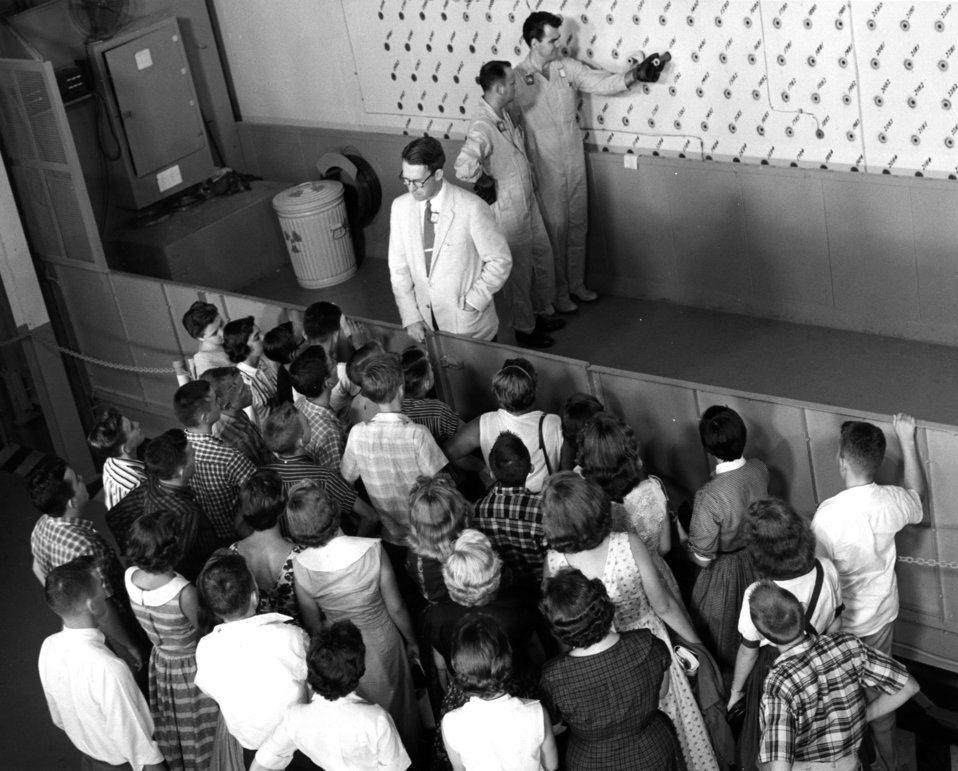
Students Tour Graphite Reactor Oak Ridge

57-1560gb DOE photo Ed Westcott 1957 Oak Ridge Tennessee